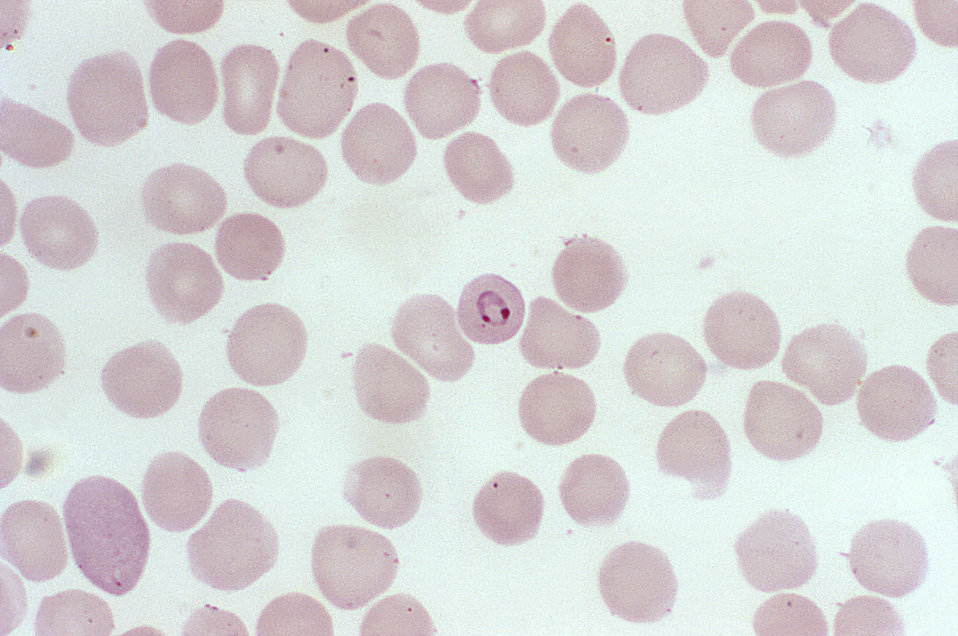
A photomicrograph of a blood smear with Plasmodium malariae parasites infecting RBCs during the ring stage.